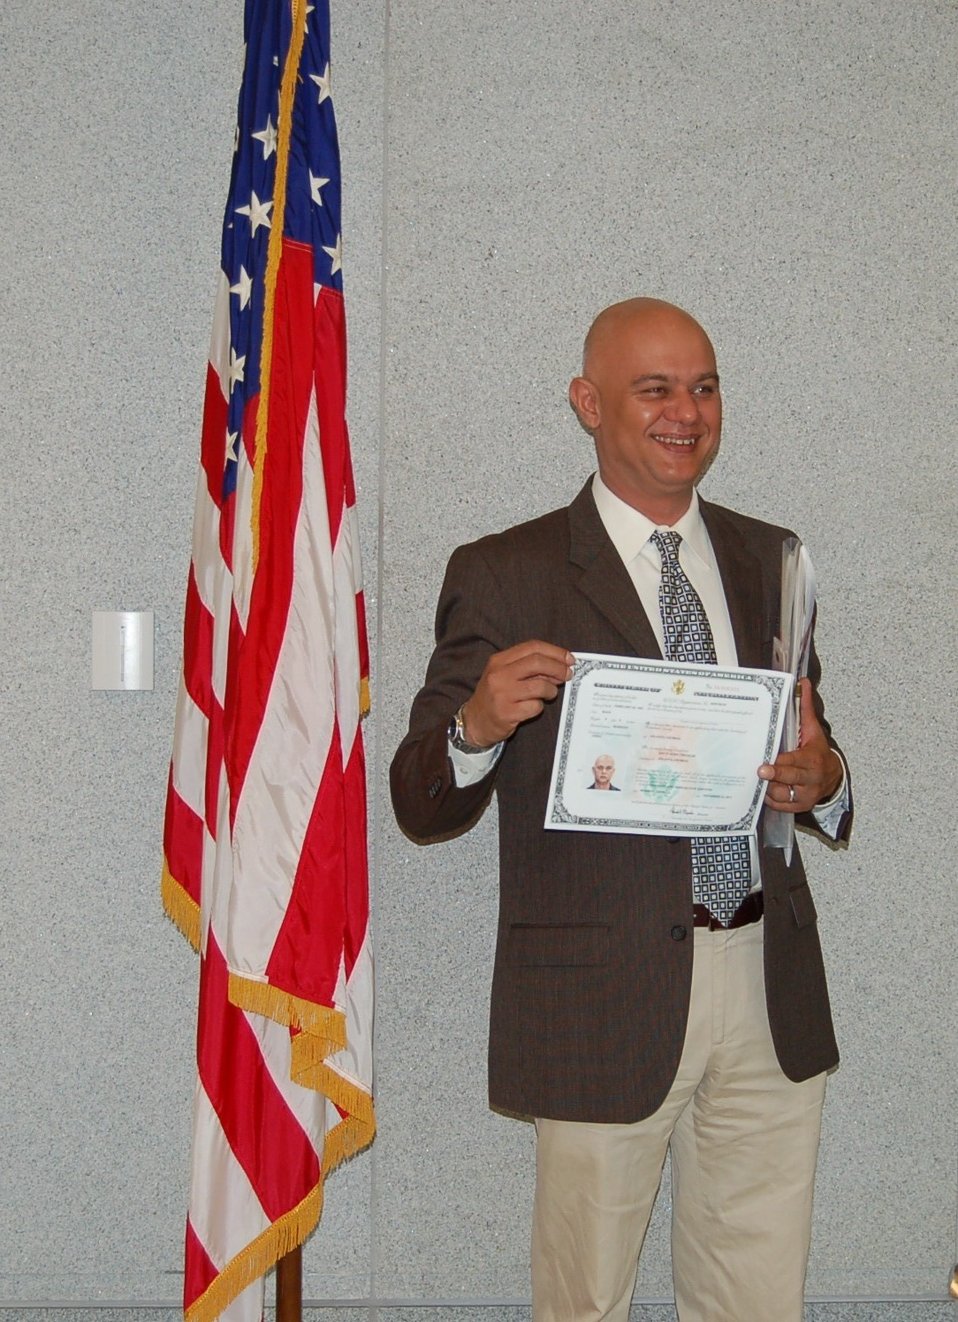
New Citizens